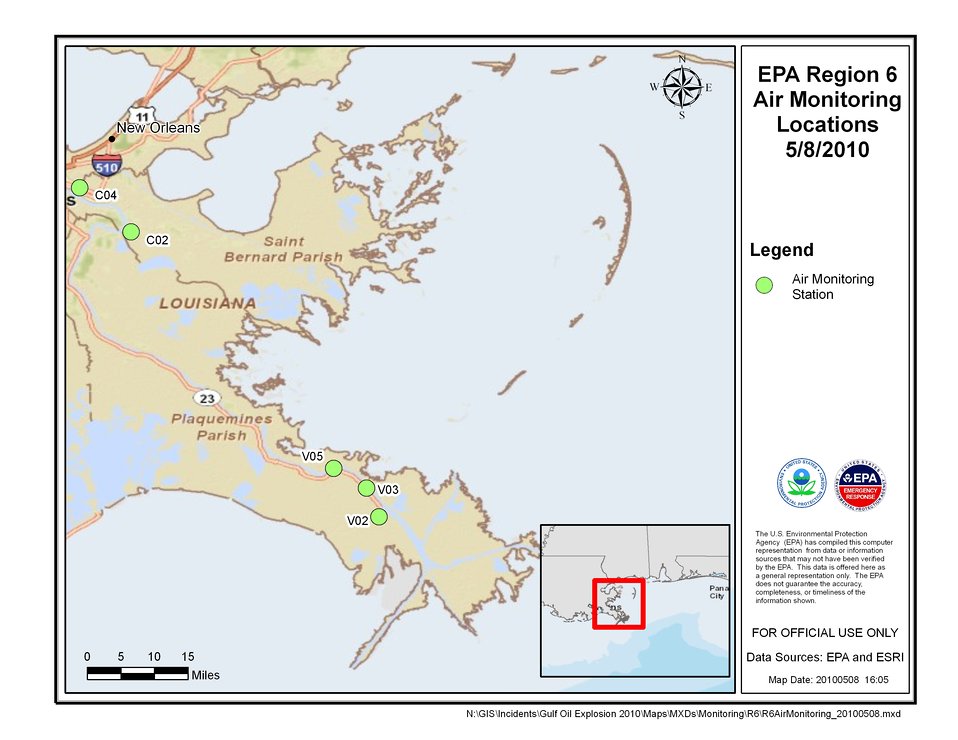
EPA Air Monitoring Locations May 4, 2010